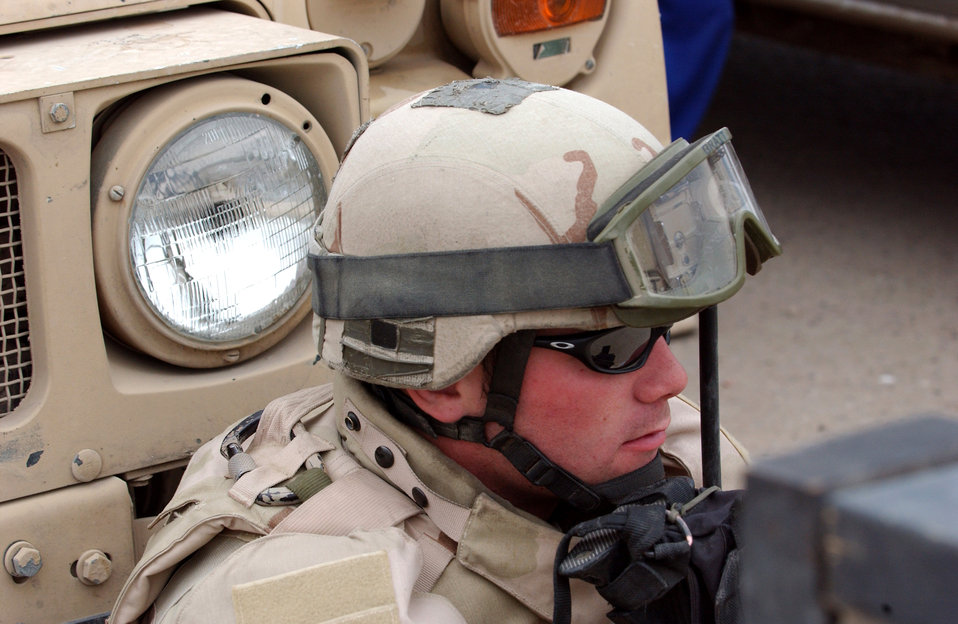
Street patrol

Senior Airman Michael Brait takes a break at the Hy Al-Amil district police precint Nov. 23 in Baghdad, Iraq. Airmen from Detachment 7, 732nd Expeditionary Security Forces Squadron deploy into the city streets of Baghdad assisting Iraqi police in achieving self-sufficiency.